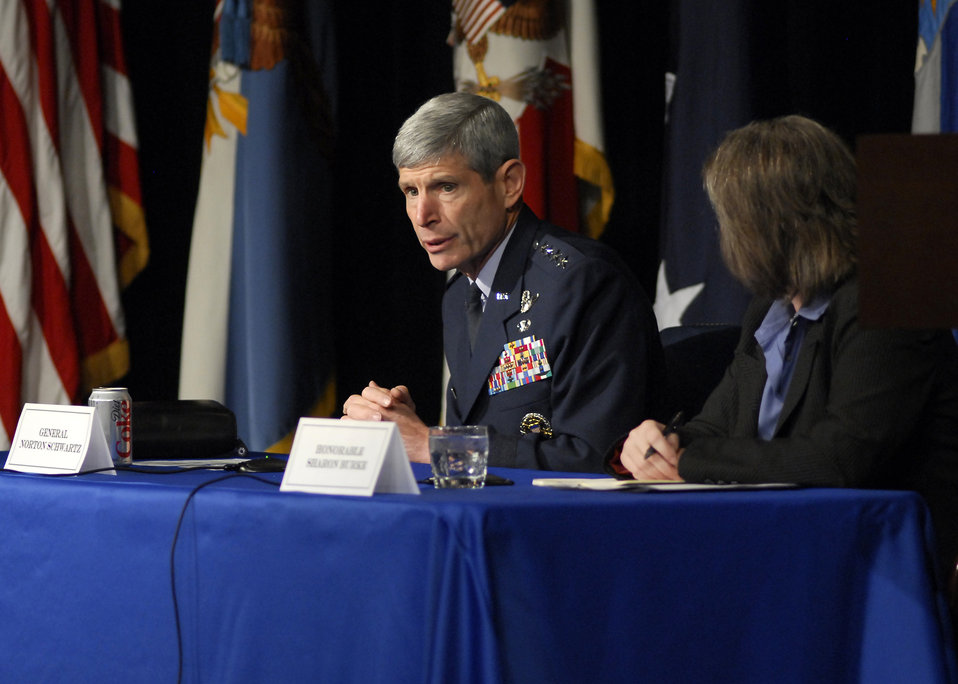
CJCS: Air Force has 'led the way' in energy security

Air Force Chief of Staff Gen. Norton Schwartz talks about recent Air Force energy initiatives Oct. 13, 2010, during the Pentagon Energy Security Event in Washington, D.C. General Schwartz participated in a senior leader panel discussion on energy issues affecting current and future military operations. The event was part of the government-wide Energy Awareness Month.